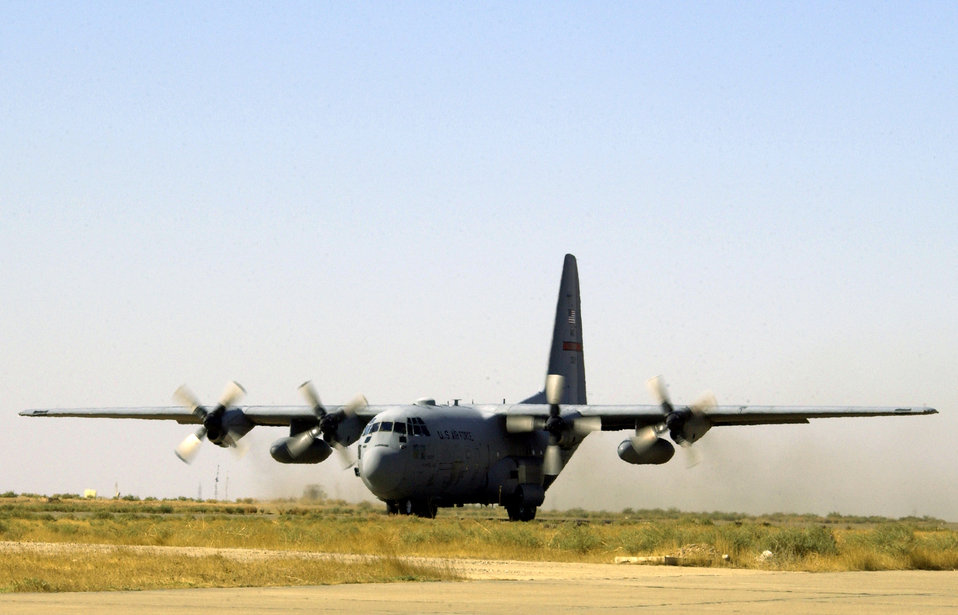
Freedom Pick Up

KIRKUK AIR BASE, Iraq -- A C-130 Hercules crew from the 379th Aeromedical Evacuation Squadron lands here Oct. 30 to pick up patients and transport them to Germany for further treatment.